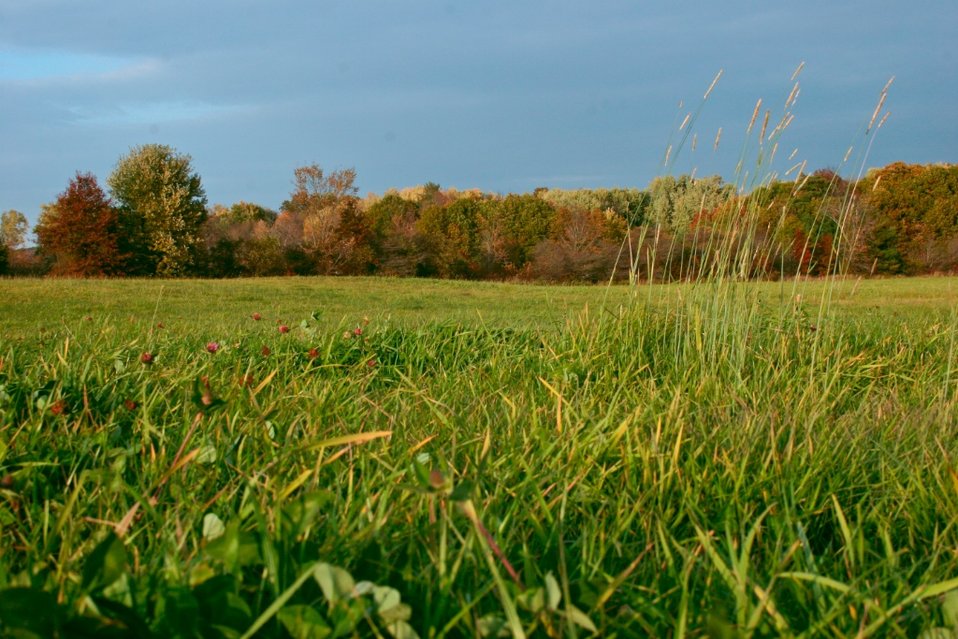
Open Fields

Fields of grass stretch to the treeline of the Fort River Division of the Silvio O. Conte National Fish and Wildlife Refuge in Hadley, MA.